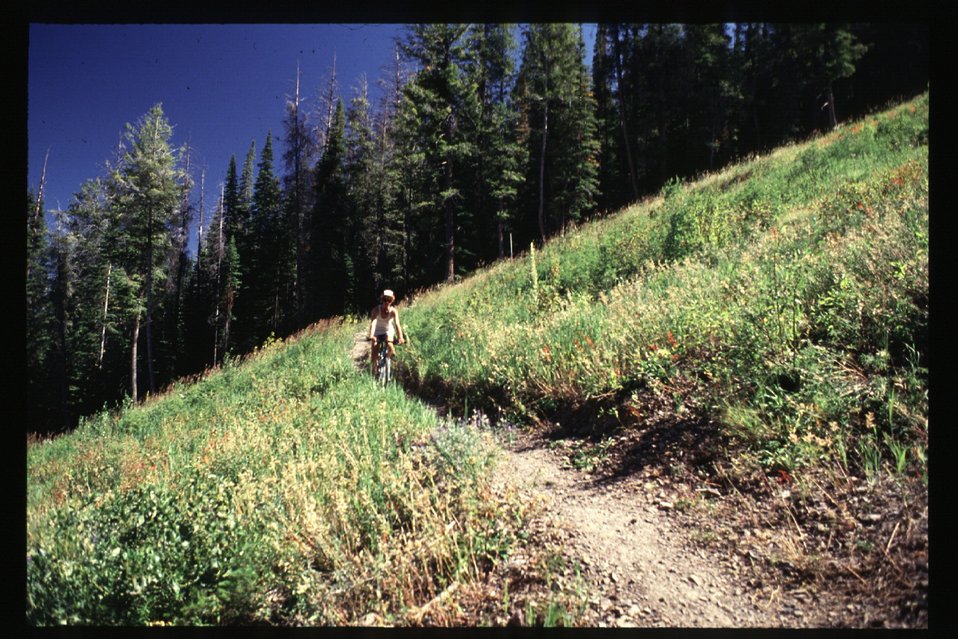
Bald Moutain Trail Sun Valley Recreation Scenic Biker Shoshone Field Office USRD Upper Snake River District